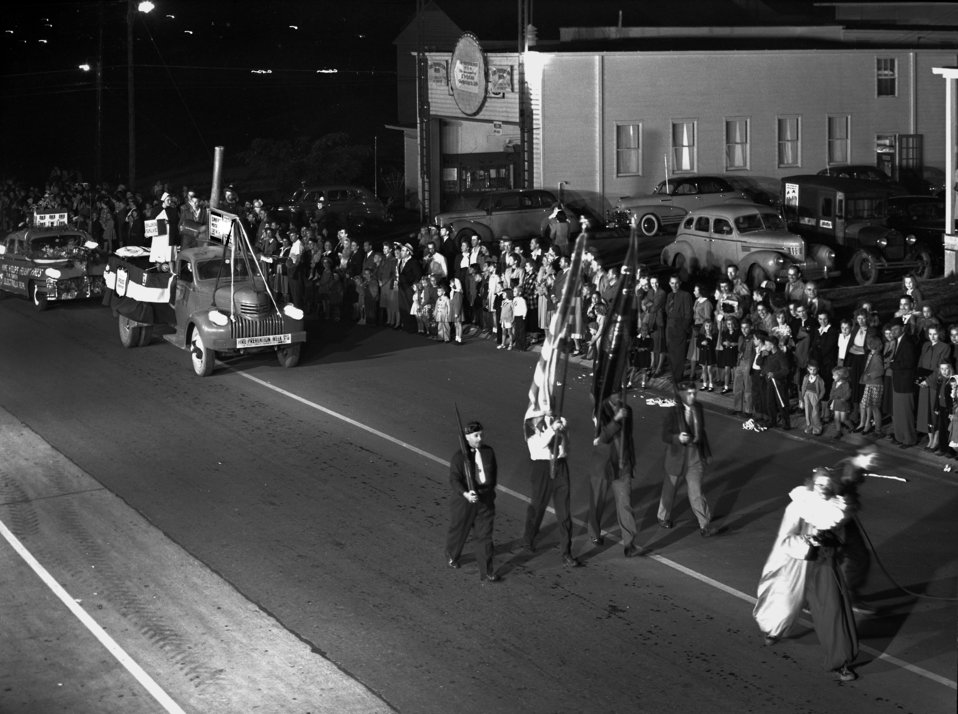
Parade Fire Prevention Week Oak Ridge 1948

5267-7d DOE photo Ed Westcott 10-9-1948 Oak Ridge Tennessee